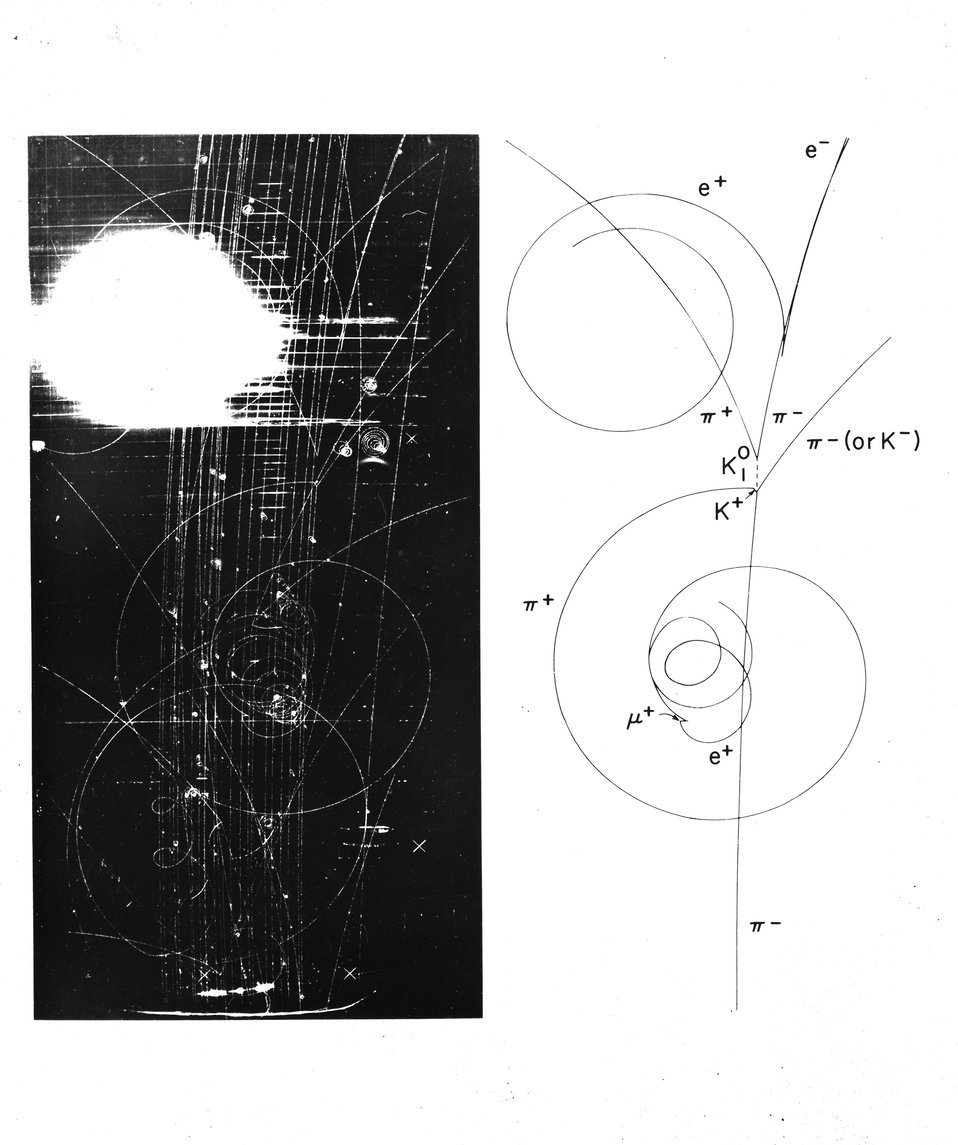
Liquid hydrogen bubble chamber photograph of a negatively-charged pi meson interacting with a proton (hydrogen nucleus) to produce a positive K meson, a neutral meson, shown by the dotted line, a negative meson, and a neutron, whose path is now shown (neutral or uncharged particles do not leave tracks).